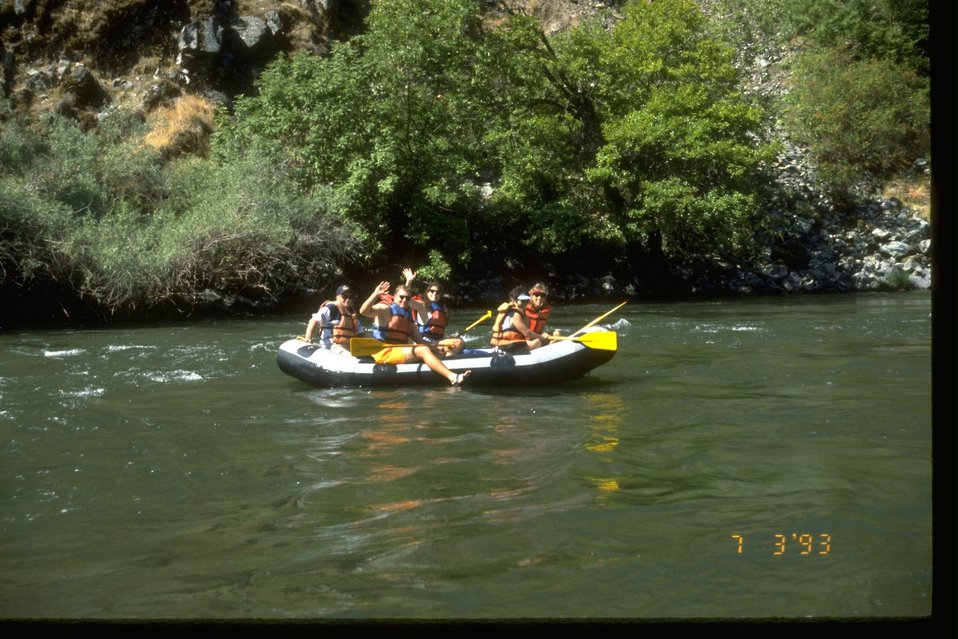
Paddle raft in the Rogue River Hellgate Canyon.